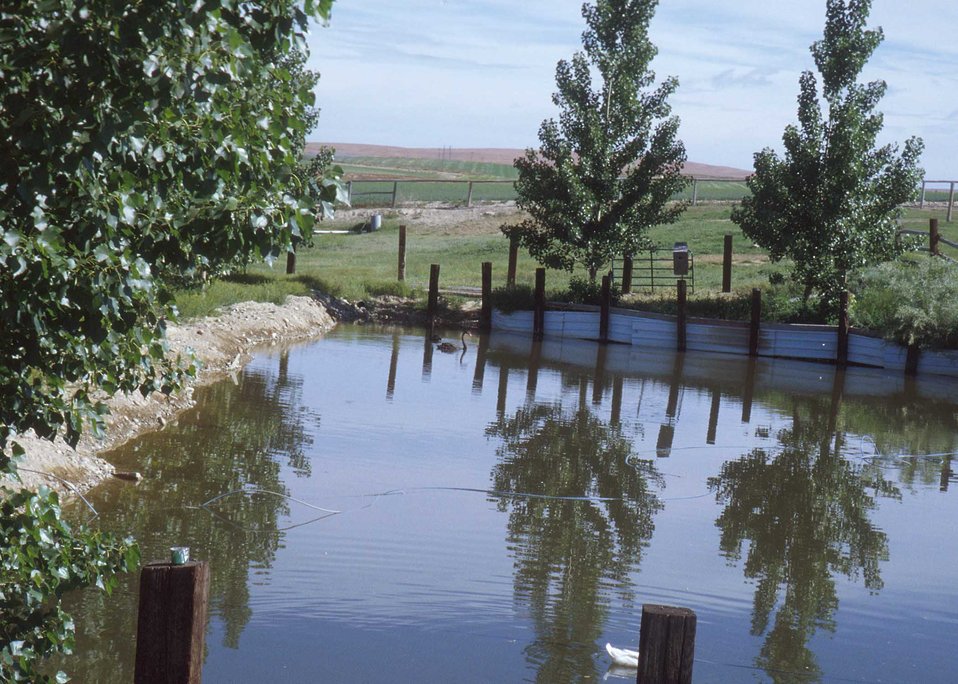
Farm ponds conserve water and provide fish and wildlife habitat.